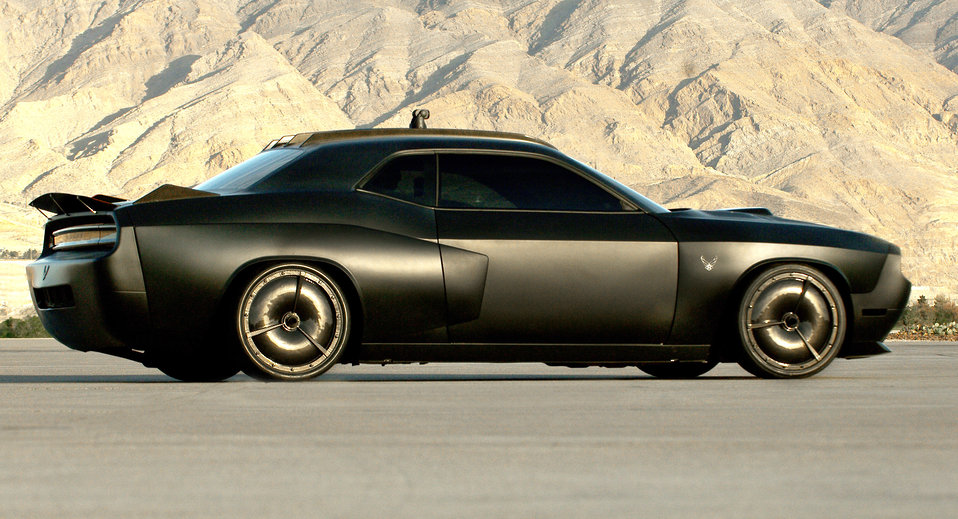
Super Car Tour

The stealth-black Air Force Challenger 'Vapor' features a biometric access to open the vertical doors, a custom stealth body kit with jet enhancements and a carbon fiber exterior trim. Other exterior components include one-off carbon fiber wheels, a custom stealth exhaust mode that allows the vehicle to run in complete silence or the headers can be opened facilitate the aggressive sound of the engine. The vehicle features a shaker hood, radar-absorbing paint, proximity sensors and a 360-degree camera with a quarter-mile range. The Vapor is one of the Air Force's newest mobile marketing assets and will be touring high schools and a variety of Air Force sponsored events as part of the 2009 Super Car Tour.